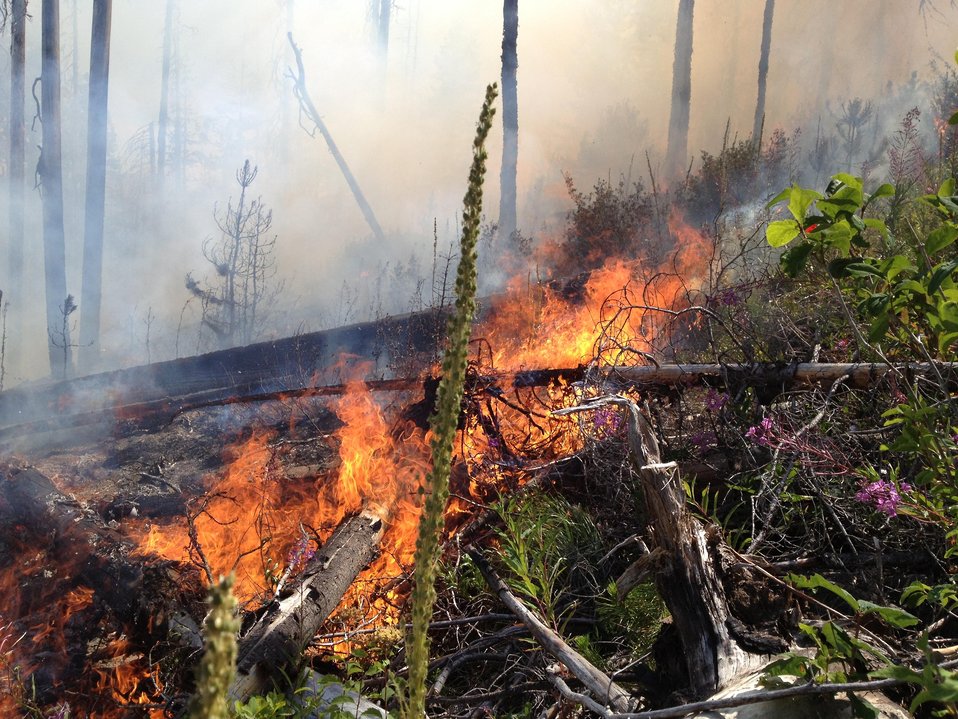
The Gold Pan Fire in the Bitterroot National Forest near Conner, MT began by lightning on Jul. 16, 2013 by lighting have consumed approximately 16,330 acres.